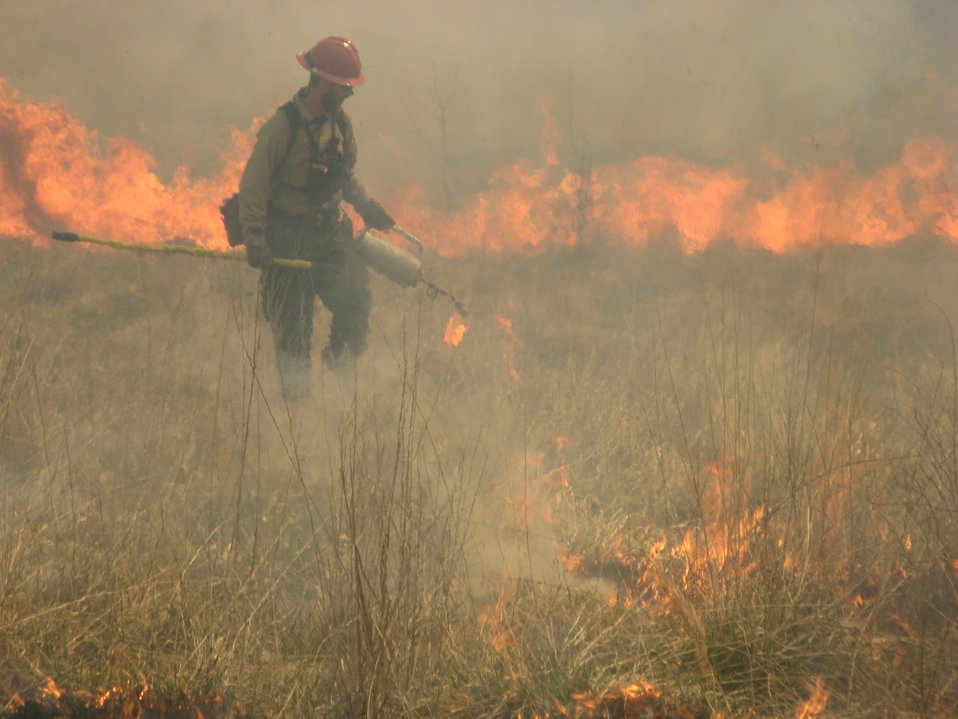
Firing with drip torch

Laurel, MD: A firefighter from the National Park Service lights a controlled burn with a drip torch at Patuxent National Research Refuge. The U.S. Fish and Wildlife Serrvice relys on partner agencies to help do burns and achieve conservation goals.